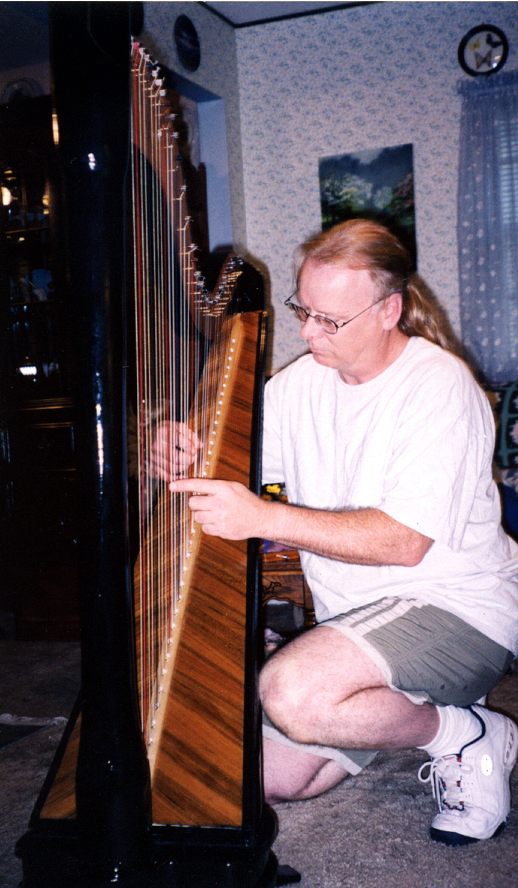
Craftsman makes music

LONG BEACH, Miss. -- Fred McMichael plays the harp that took him three years to make at his home here. He is a local network administrator at nearby Keesler Air Force Base.